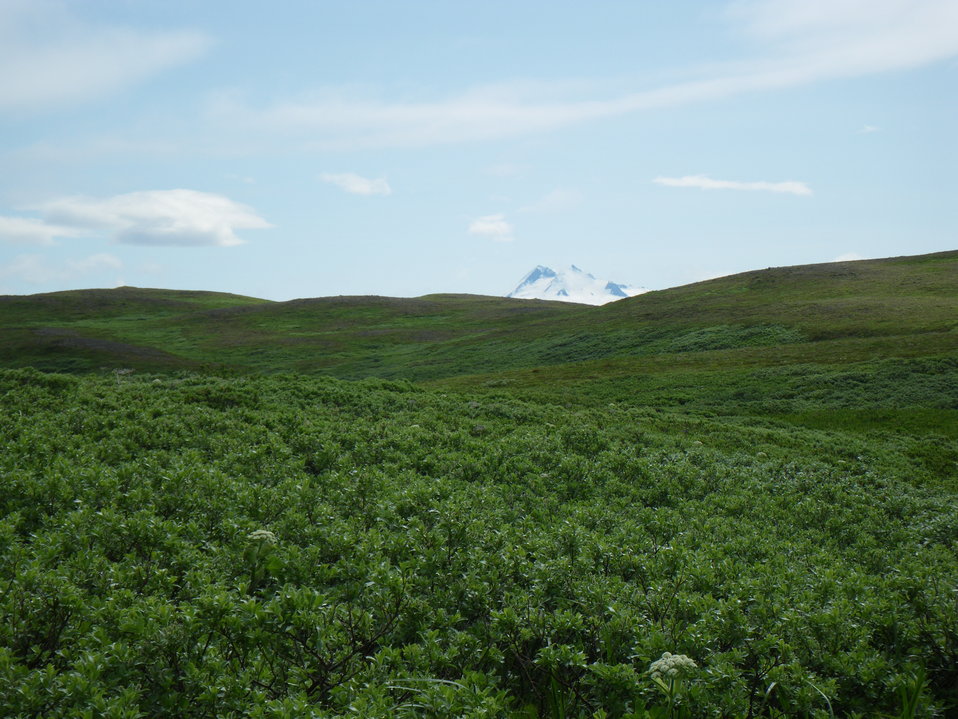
Izembek Landscape

Near Blaine Point, Mount Dutton in background, Izembek National Wildlife Refuge